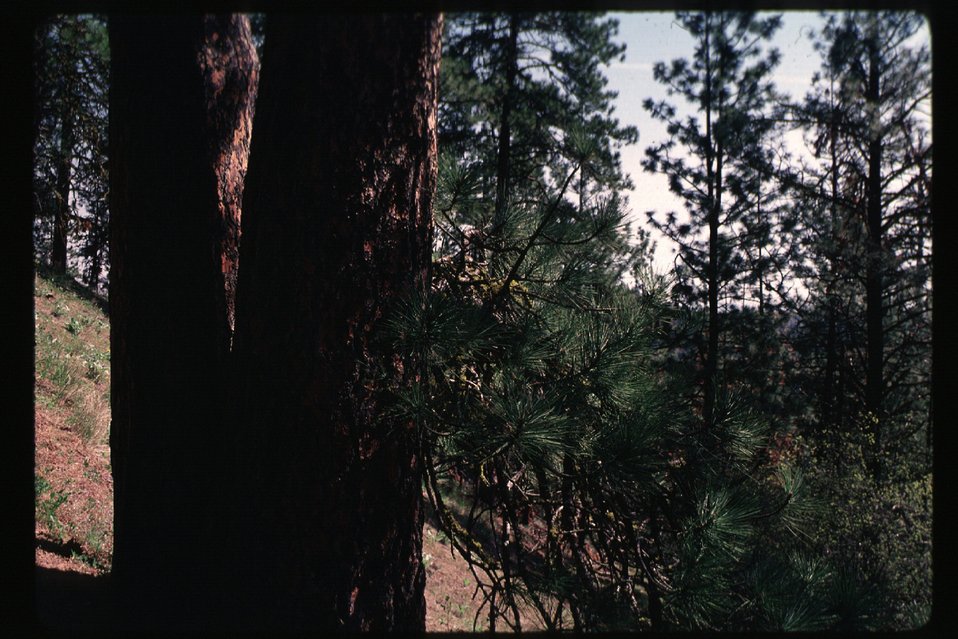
Forestry Couer d'Alene Field Office UCSC Upper Columbia Salmon Clearwater